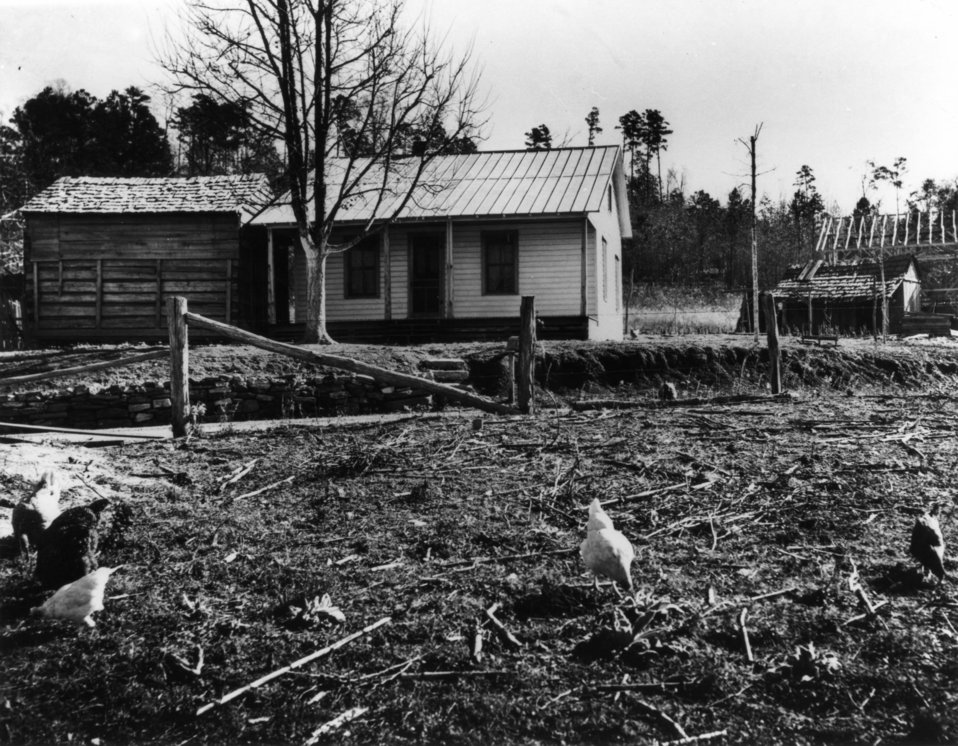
Early settlers at Oak Ridge